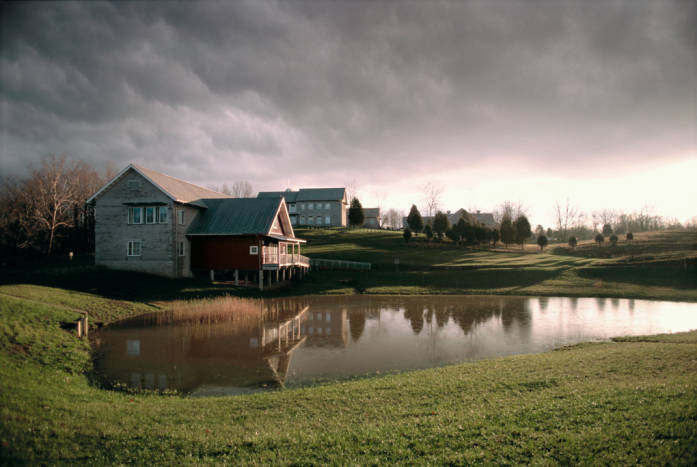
Educational Outreach building and pond at National Conservation Training Center